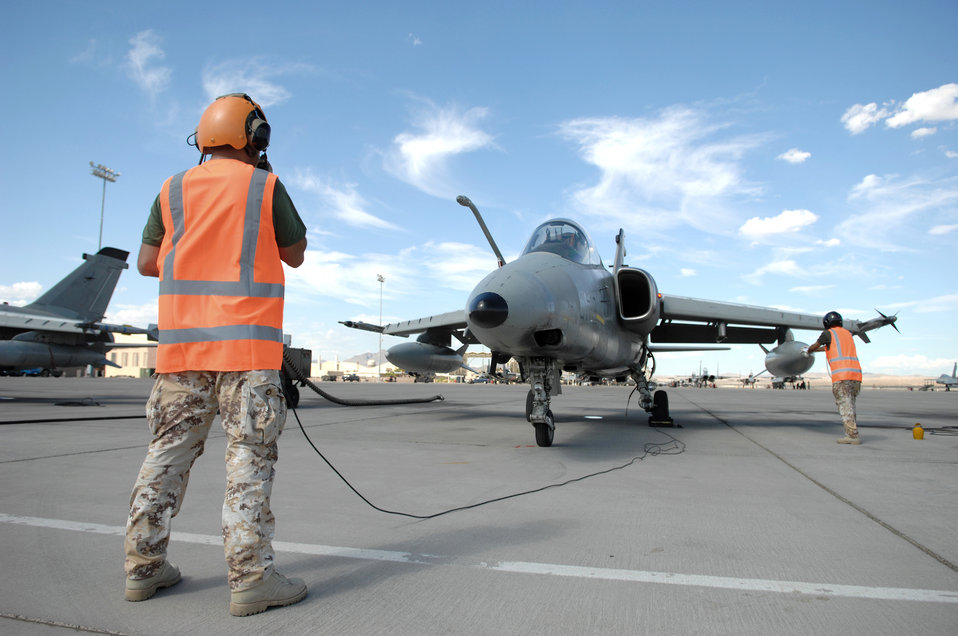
Green Flag provides Italian air force new insight on close air support

Italian air force Chief Master Sgts. Francesco Alberico and Giuseppe Di Pasquale conduct preflight checks on an AMX/A-1 before a their first Red Flag 09-5 training mission Aug. 24 at Nellis Air Force Base, Nev. Before participating in Red Flag, the Italian Air Force participated in their first-ever Green Flag here Aug. 9 through 20. Green Flag is a realistic close-air-support training exercise for Airmen and Soldiers preparing to deploy in support of combat operations in Southwest Asia. Chief Alberico is an Italian air force crew chief. Chief Di Pasquale is an avionics technician.